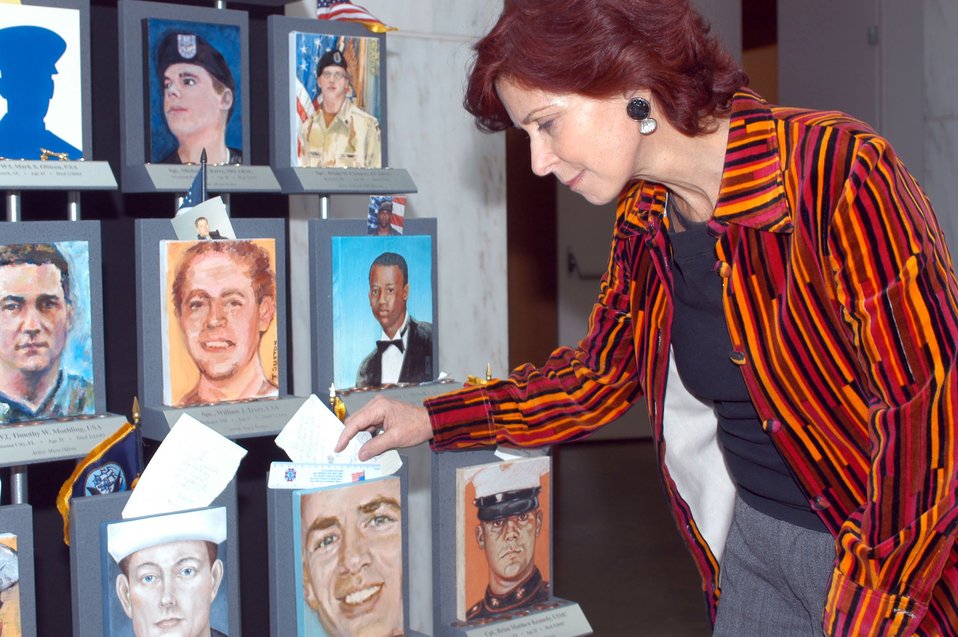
'Faces of the Fallen'

Annette Polan reads a note left next to a portrait of a fallen servicemember. She is the founder of the